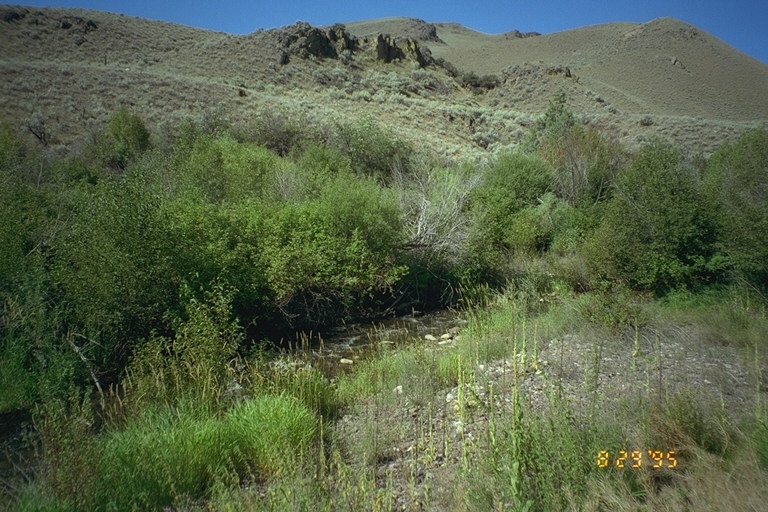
Riparian area Public Lands Salmon Field Office UCSC Upper Columbia Salmon Clearwater District